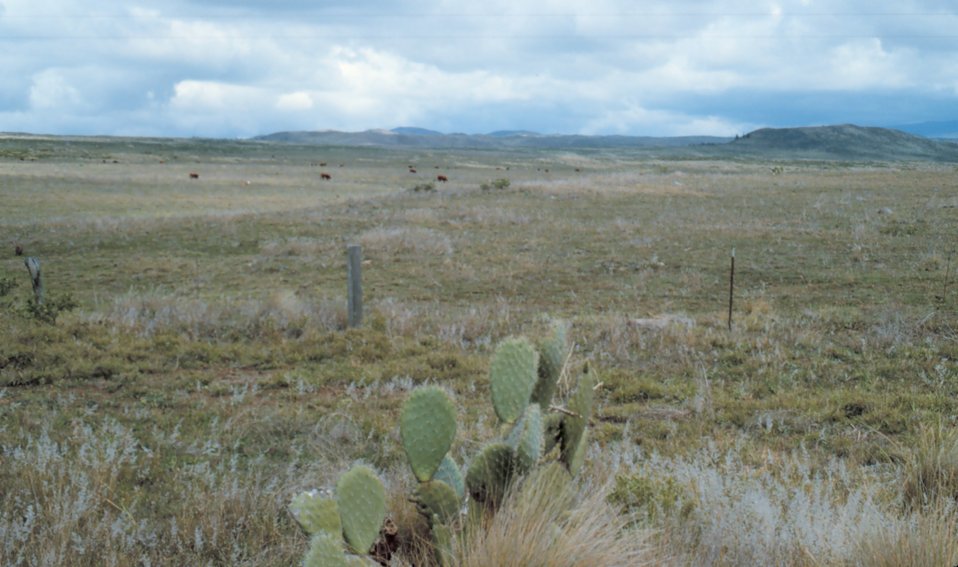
Cactus growing south of the Kohala Mountains just a few miles from tropical rainforest. Cattle on the Parker Ranch grazing in the distance.